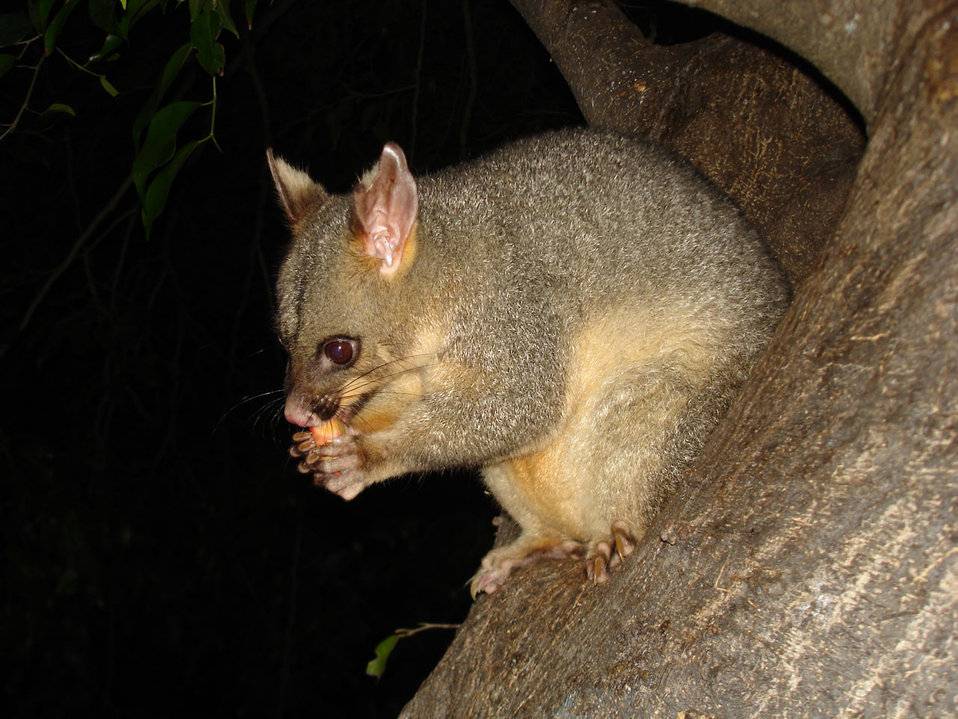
Brushtail possum

Australian brushtail possum eating apple..